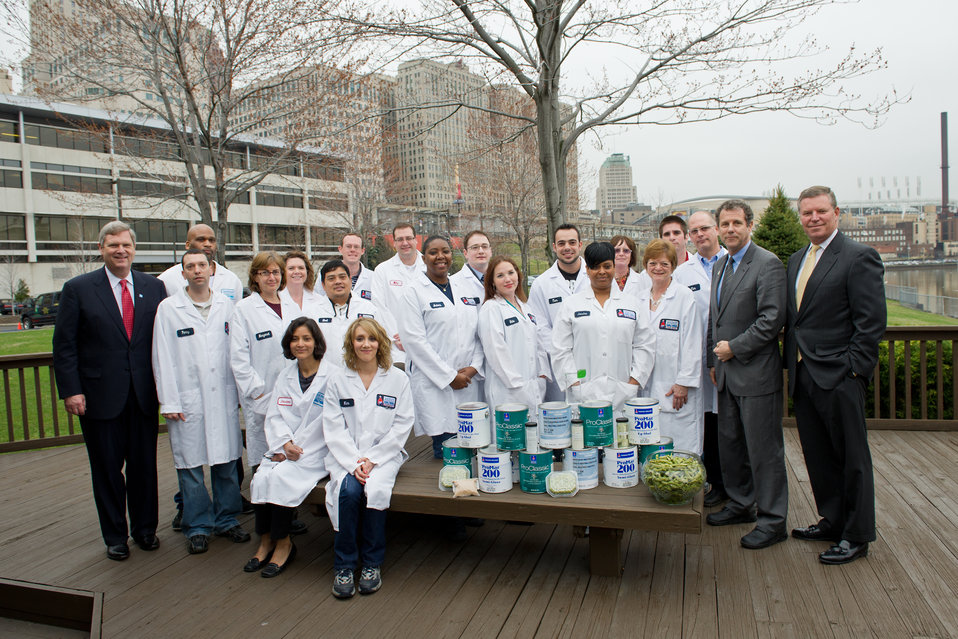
Agriculture Secretary Tom Vilsack poses with a group of workers at the Sherwin-Williams John G. Breen Technology research facility in Cleveland, Ohio on March 16, 2012 on a visit to Ohio and Michigan.